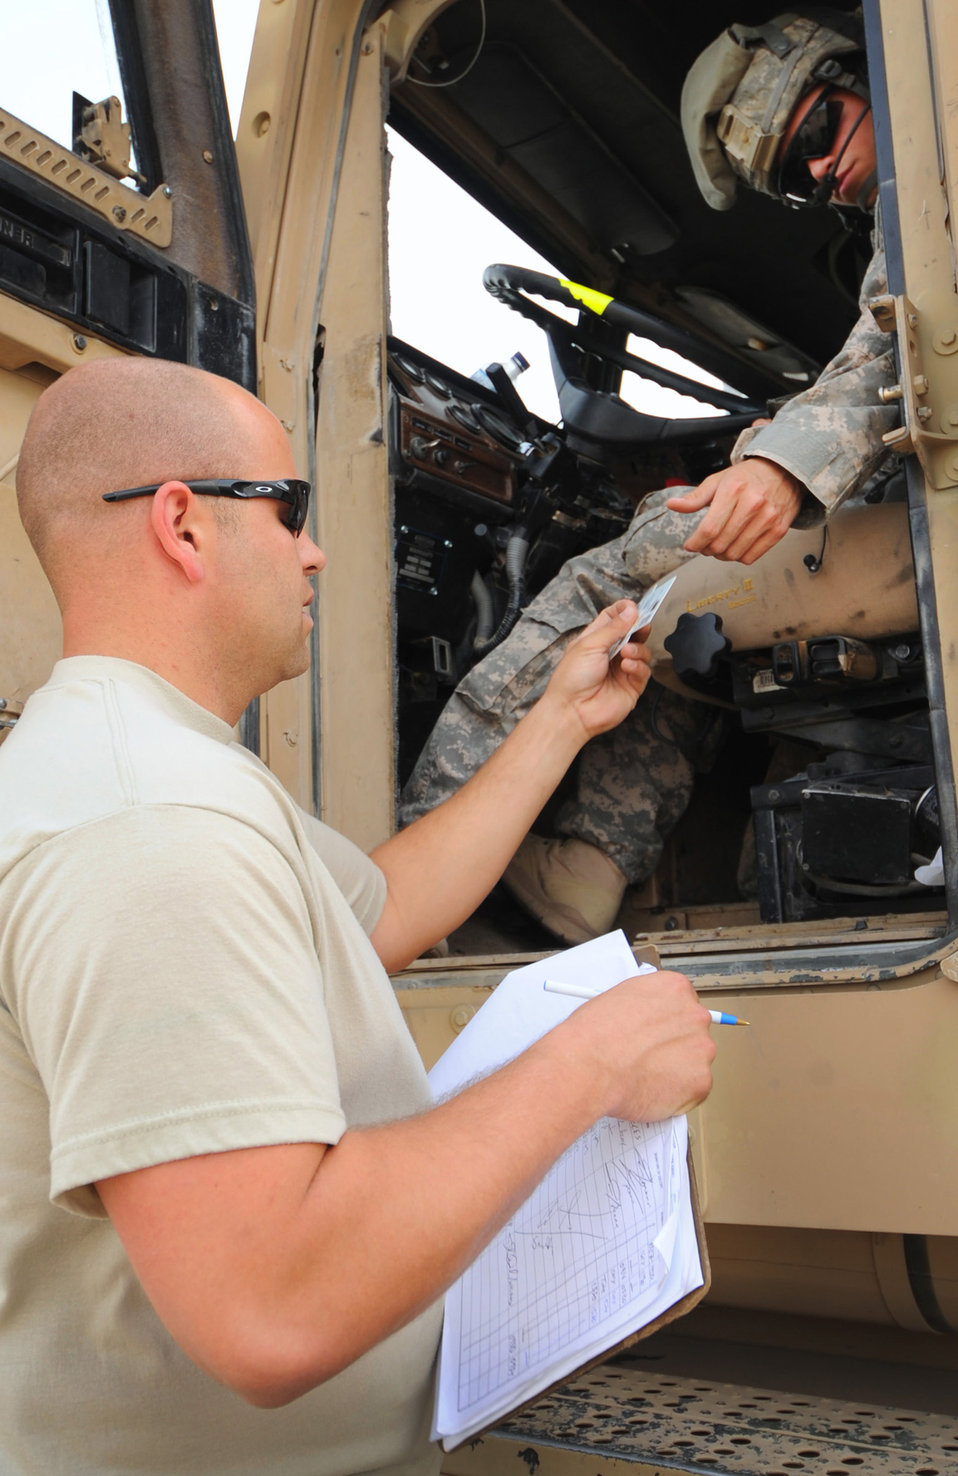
Airmen maintain the fight

Staff Sgt. John Williamson checks an Army combat trucker's ID card before he enters into a munitions storage area April 6, 2011, at an air base in Southwest Asia. Sergeant Williamson is assigned to the 386th Expeditionary Maintenance Squadron.